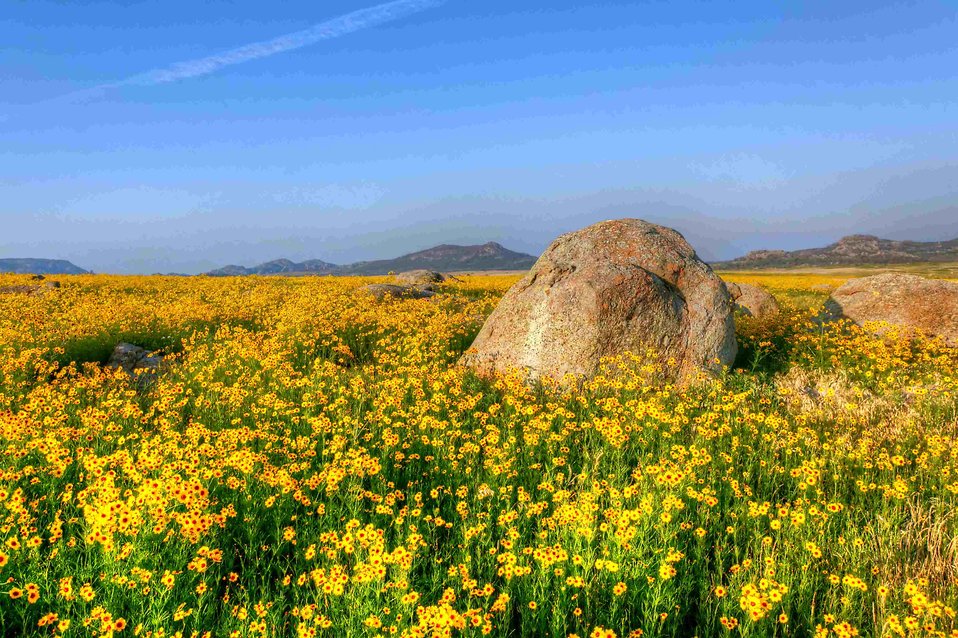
Coreopsis in bloom

Wildflowers at Wichita Mountains Wildlife Refuge in Oklahoma.